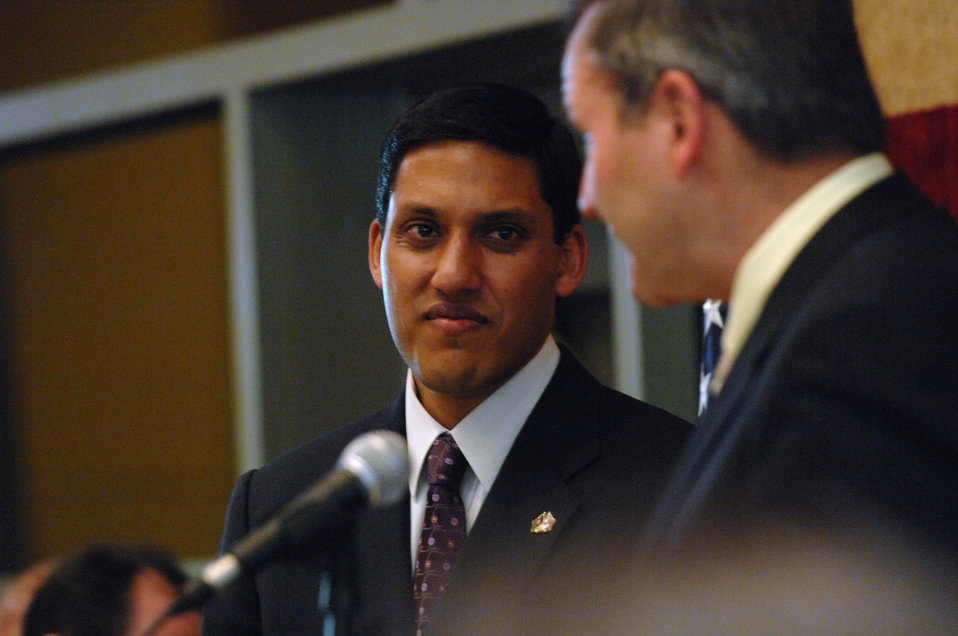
110208sv Shah137

Dr. Rajiv Shah, Administrator of the United States Agency for International Development (USAID), holds a town hall meeting at the U.S. Embassy in Kabul, Afghanistan on Tuesday, February 8, 2011. (S.K. Vemmer/Department of State)